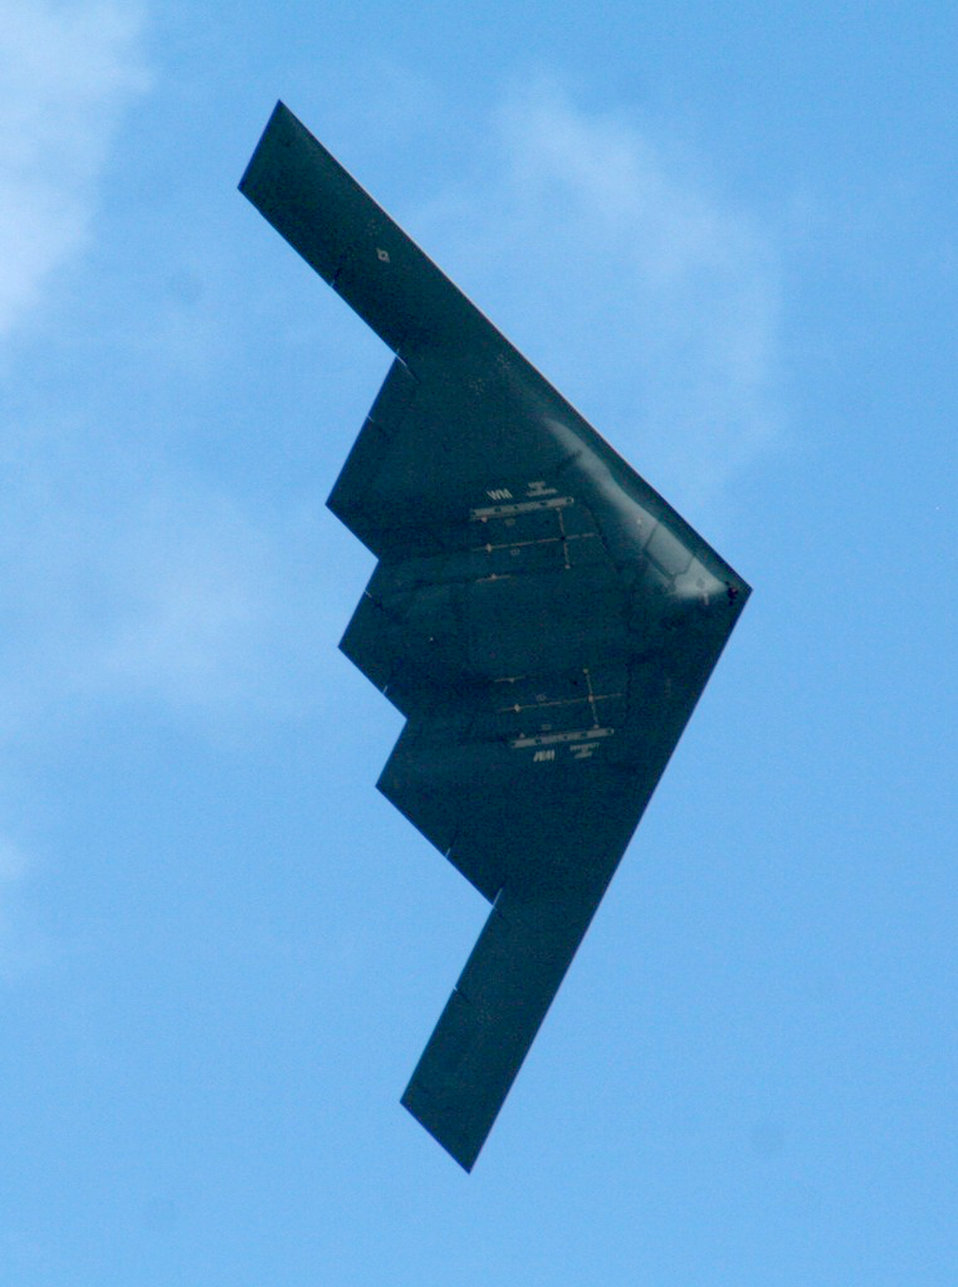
Scott AFB air show

An aircrew flies a B-2 Spirit over the airfield as part of an aerial demonstration for the 2010 Airpower Over the Midwest Air Show Sept. 11, 2010, at Scott Air Force Base, Ill. The B-2 is assigned to Whiteman AFB, Mo.